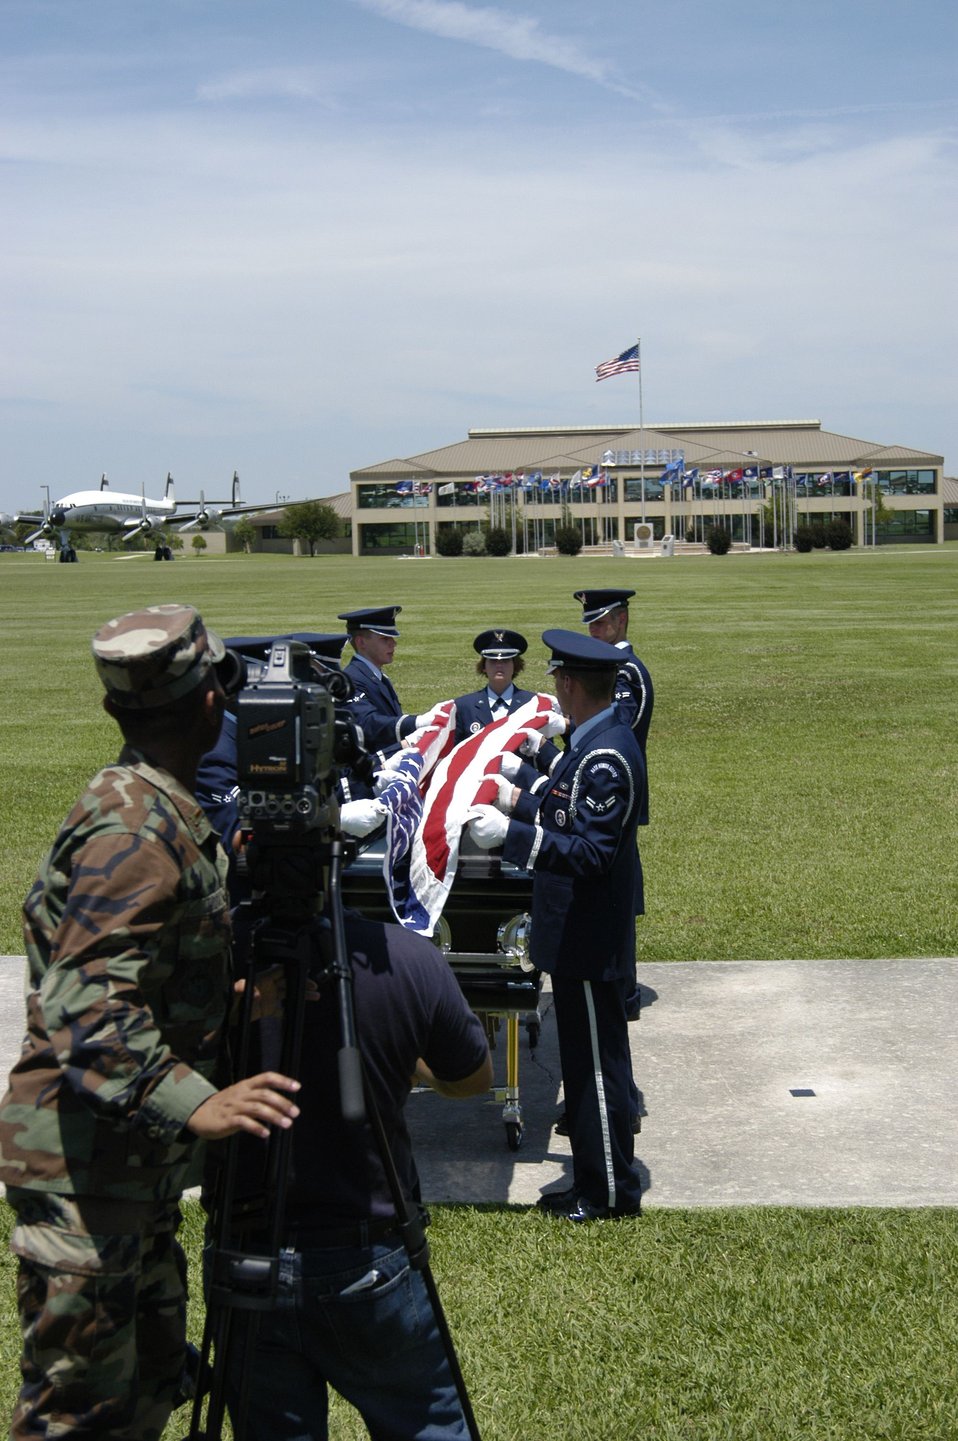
Video highlights honor guard mission

LACKLAND AIR FORCE BASE, Texas -- Second Lt. Navann Huoth films honor guard Airmen practicing to fold a flag above a casket. Airmen of the 37th Communications Squadron are producing a three-to-five minute honor guard mission video to help recruit new honor guard members. Lieutenant Huoth is the producer-director of the video.